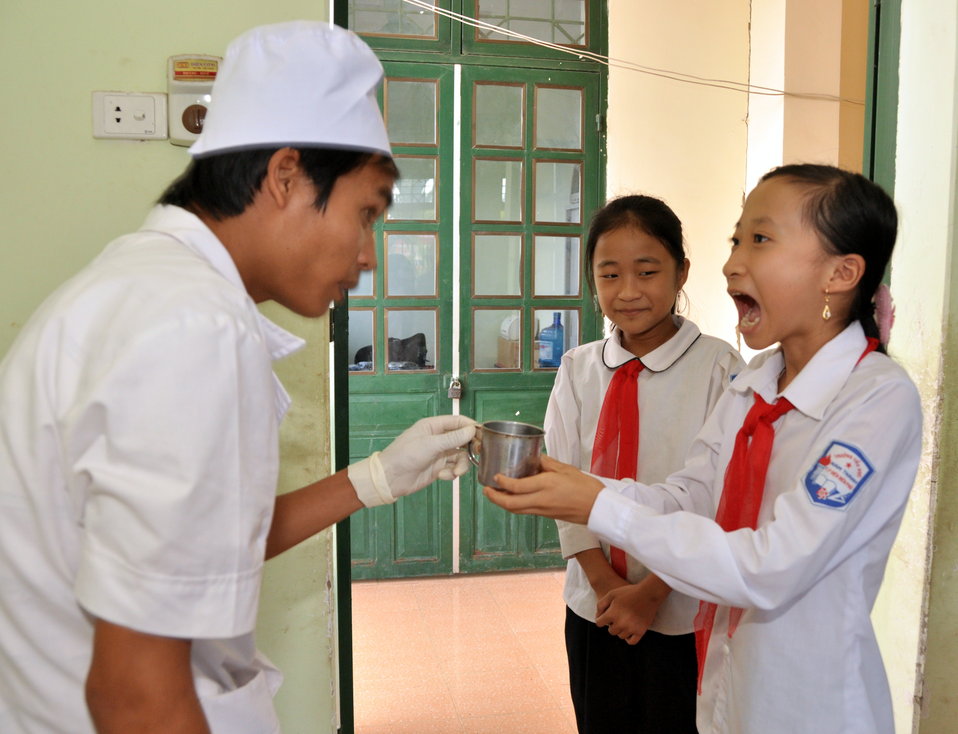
School children receive a dose of deworming medicine in Dien Bien